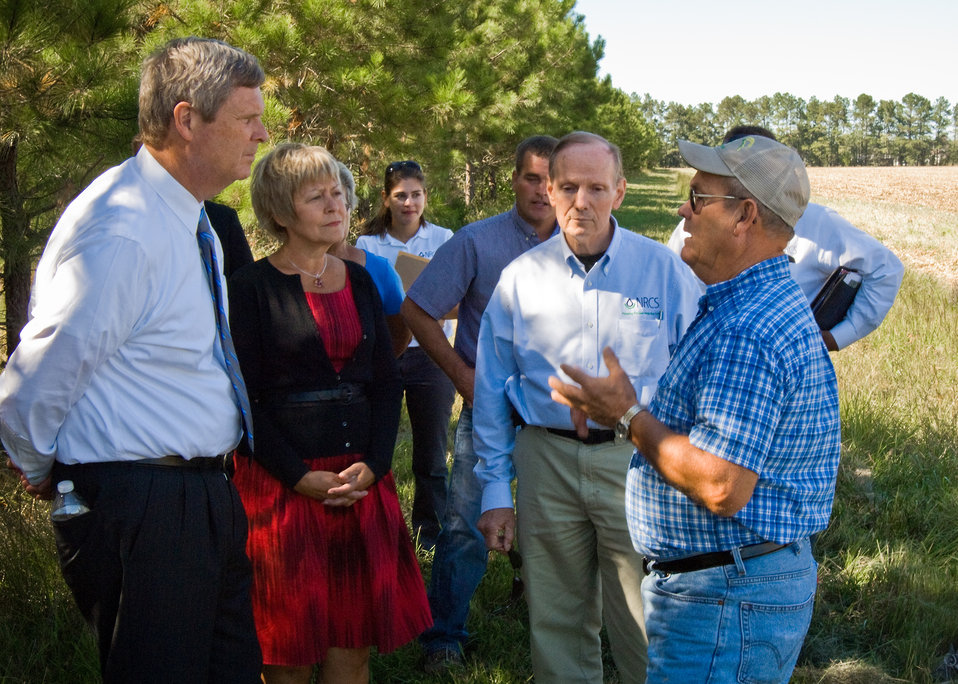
Agriculture Secretary Tom Vilsack (left) and Lin Spicer (right), Holly Lane farms, Church Creek, Maryland, discuss the nutrient management practices Holly Lane Farms has used for nitrogen use efficiency through the Chesapeake Bay Watershed Initiative (CBWI.) and a Technical Service Provider (TSP) available through the Natural Resources and Conservation Service to develop their pest and nutrient management plans. Spicer is thinking of using poultry litter as a nutrient source for his timber. With the thick pine needle cover at the base of the trees would act as a buffer and treat the nitrogen and phosphorous as a slow release fertilizer further helping to protect the quality of the Chesapeake Bay. The event took place on Monday, September 20, 2010. USDA Photo 10di1497-59 by Bob Nichols.